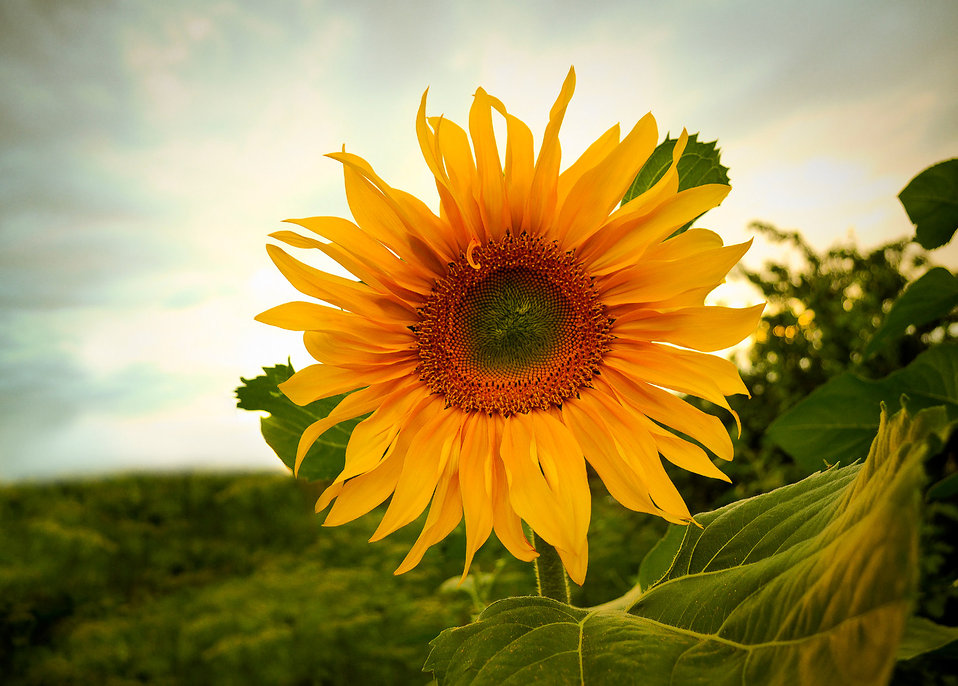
Sunflower against the sky.